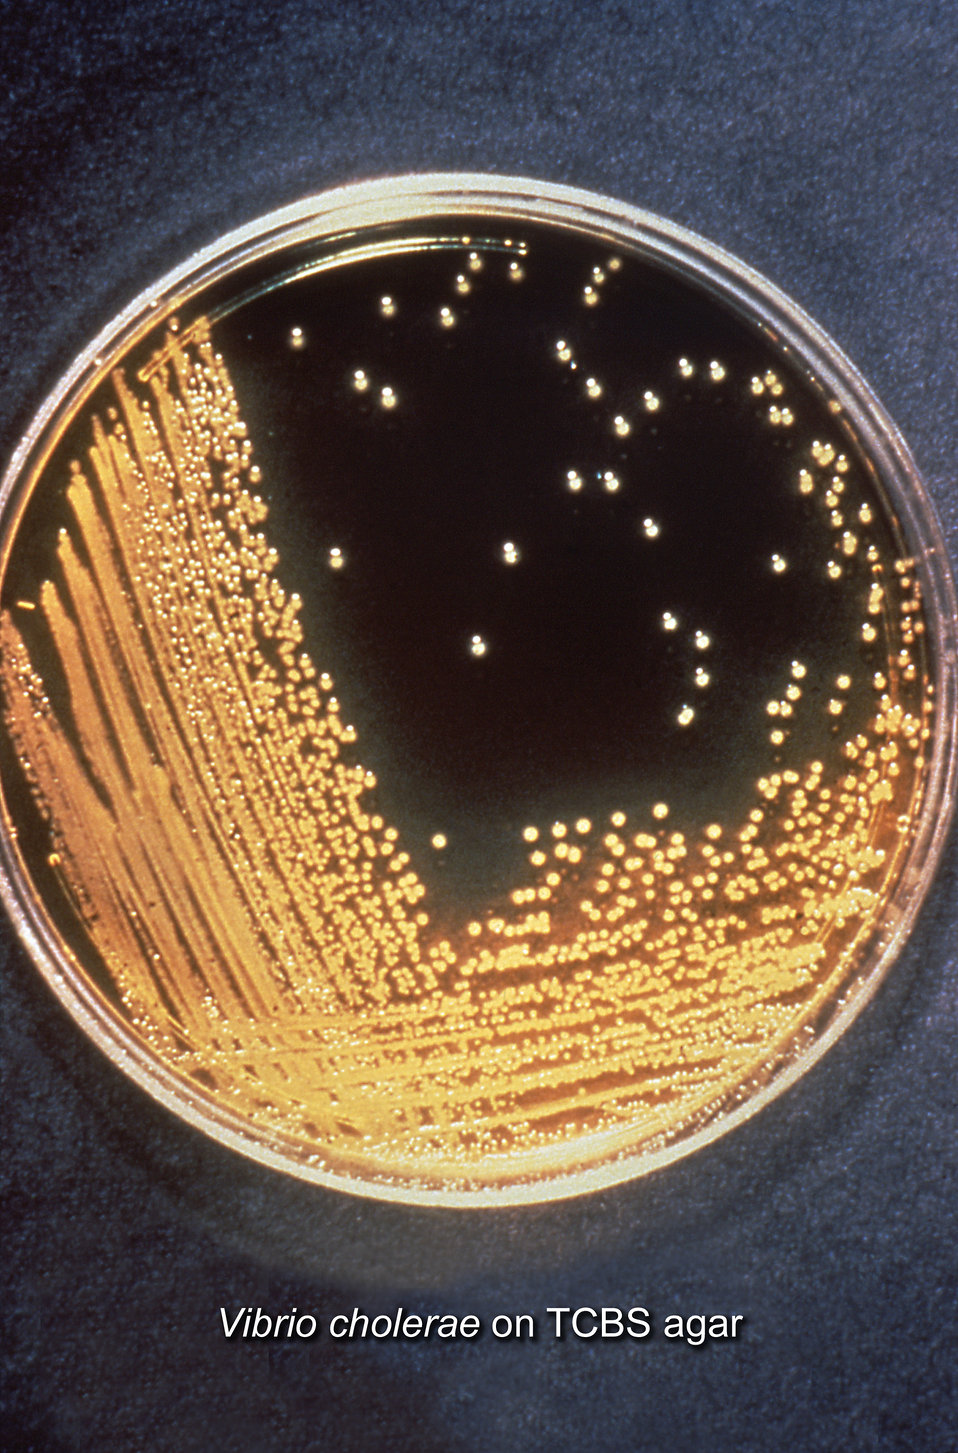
This image shows a diagnostic procedure testing for the presence of the bacterium Vibrio cholerae, the cause of cholera. These bacterial colonies had been cultivated on Thiosulfate-Citrate-Bile-Sucrose (TCBS) agar medium. Characteristic colonies can be selected. regrown on standard nutrient agar, and agglutinated in polyvalent O1 antiserum to make a rapid presumptive identification of V. cholerae O1.